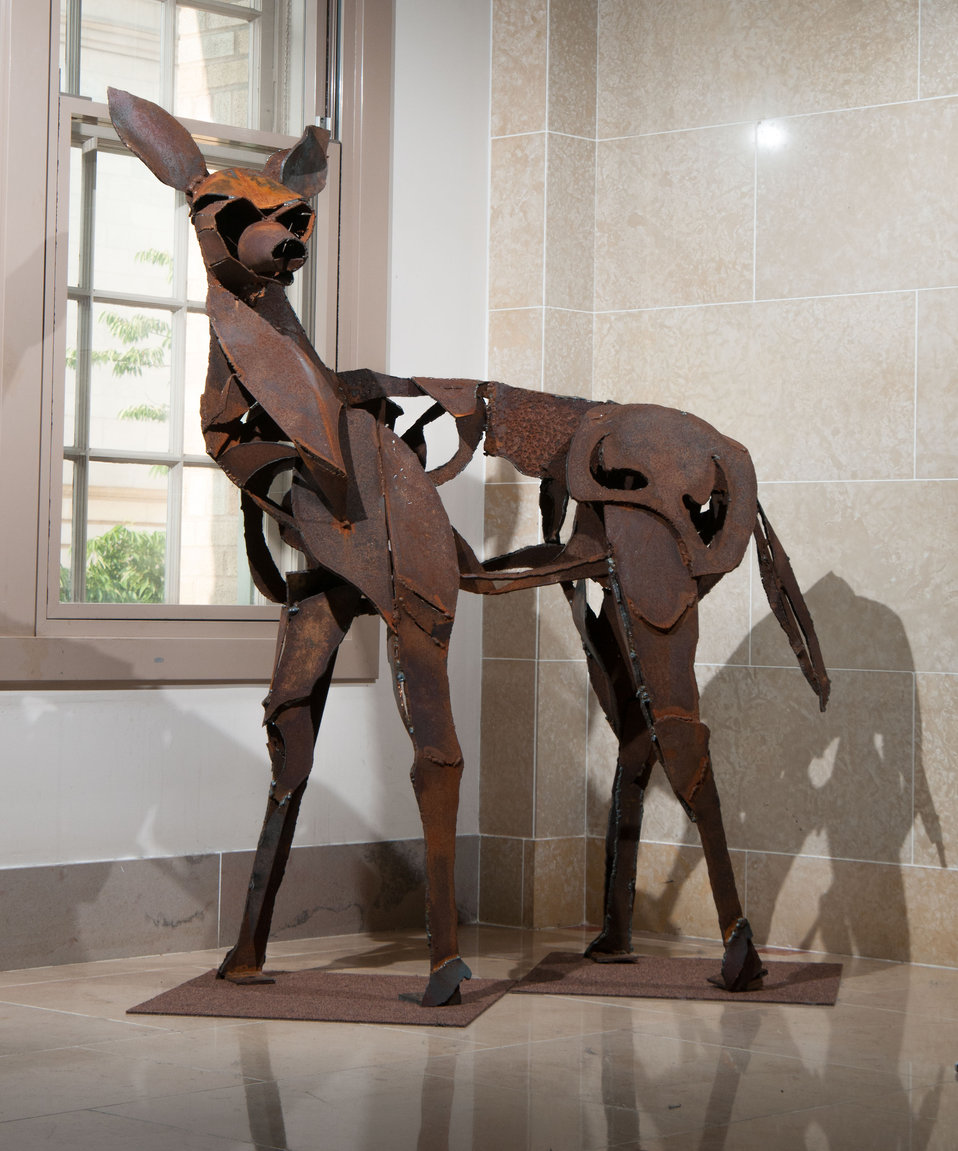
Online Viewer's Choice entries of the 2013 Art & Agriculture, Tuesday, July 9, 2013, in the South Building, Washington, D.C. Themes were expressed by employees from across the department and the contest was open to full-time and part-time USDA employees. Winning artwork will be displayed till the end of the year. U.S. Artistic expression is a creative outlet that is vital for an individual to grow and develop.